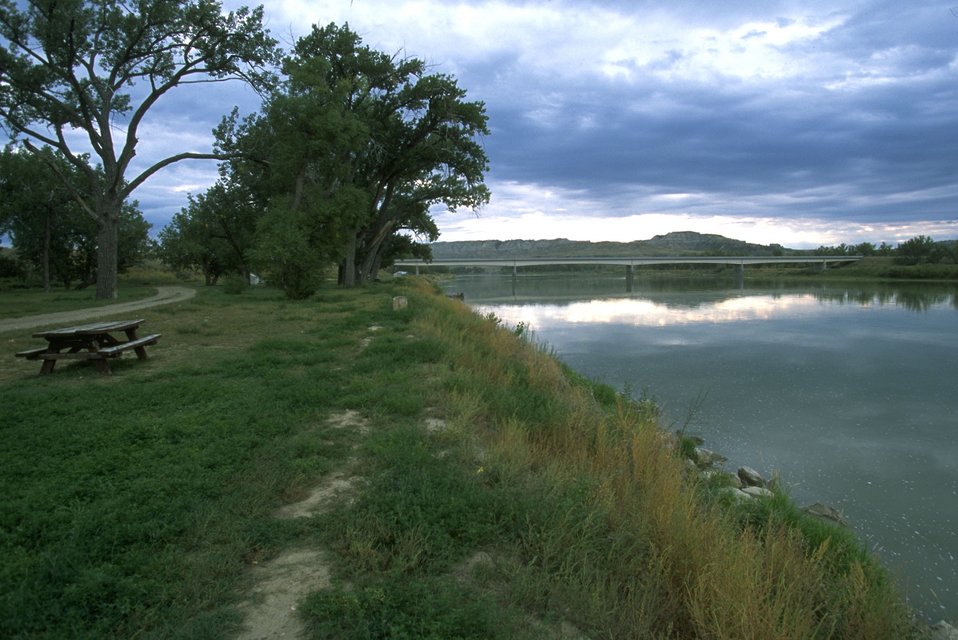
Judith Landing on the Upper Missouri River north of Winifred